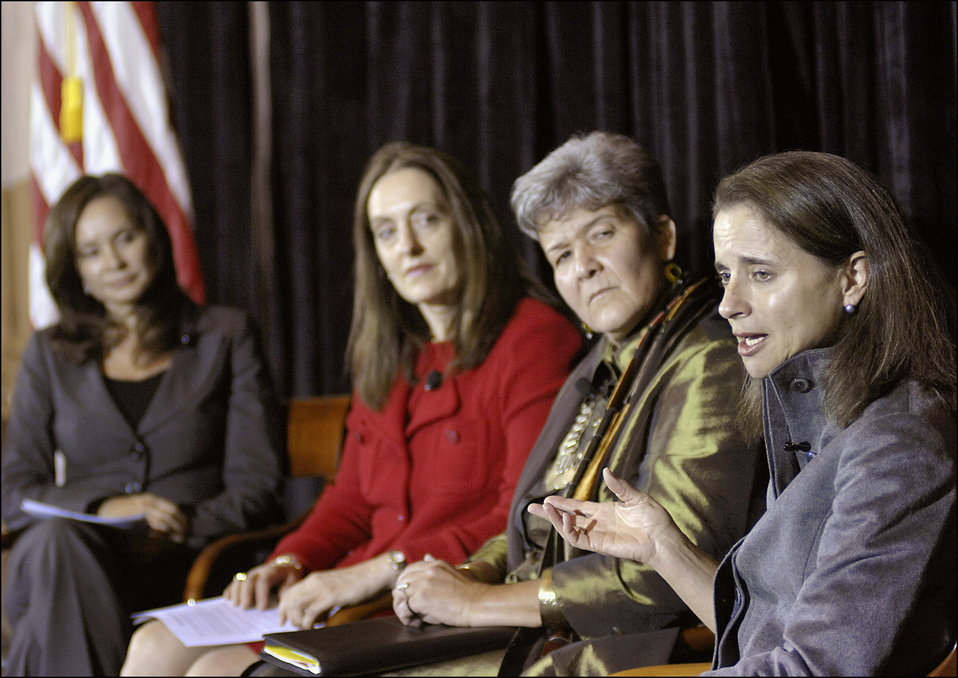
Inaugural Women in Finance Leadership Series, 10/19/10

Treasurer of the United States Rosie Rios, Assistant Secretary for Intelligence and Analysis Leslie Ireland, Assistant Secretary for International Markets and Development Marisa Lago and Assistant Secretary for Financial Markets Mary John Miller at the inaugural Women in Finance Leadership Series at Treasury.